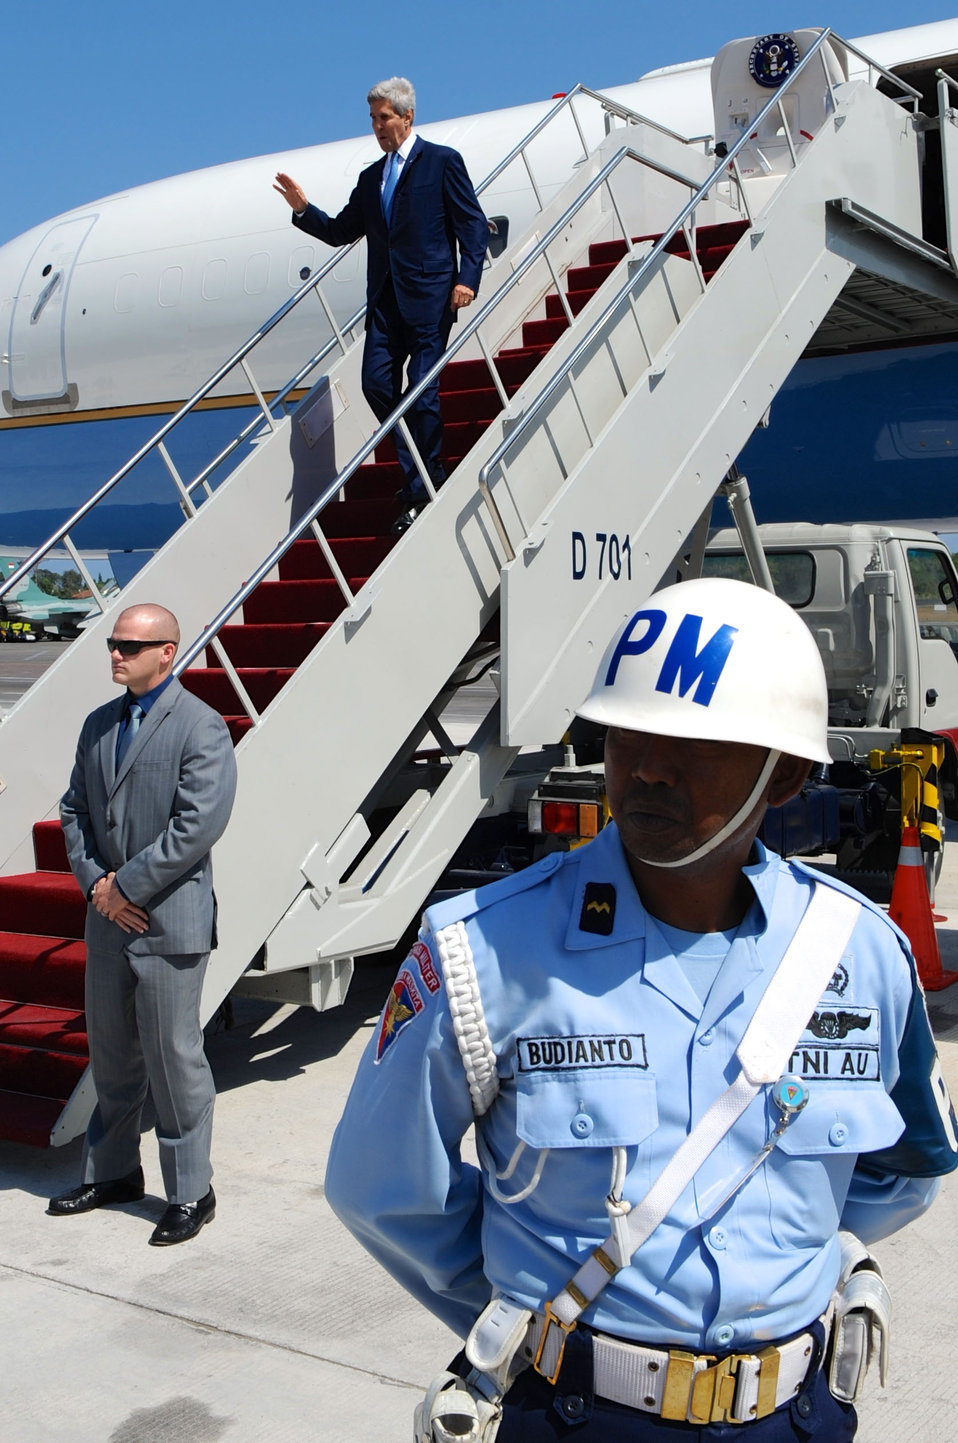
Secretary Kerry Arrives in Bali, Indonesia, for the APEC Ministerial Meeting

U.S. Secretary of State John Kerry waves as he disembarks from his Air Force jet in Bali, Indonesia, on October 4, 2013, to attend the Asia-Pacific Economic Cooperation Ministerial Meeting.